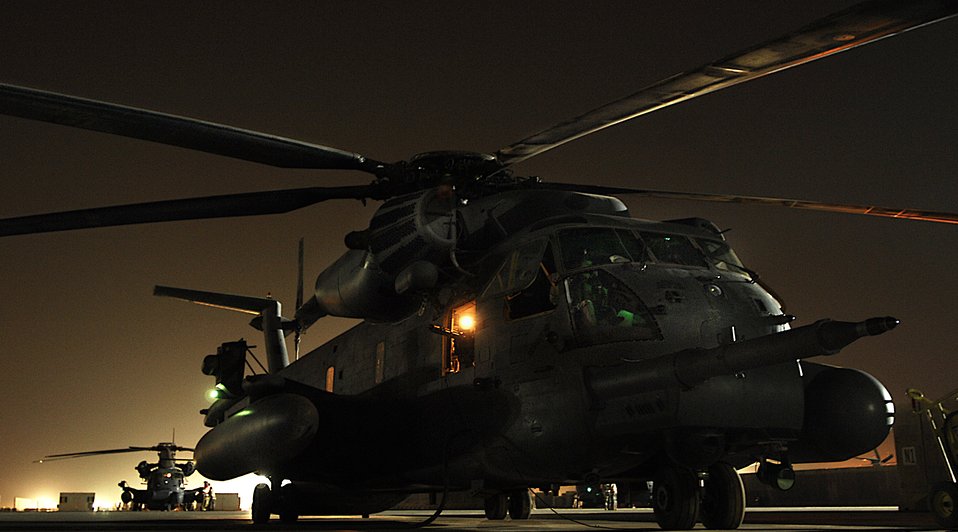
The final countdown

MH-53 Pave Low helicopters prepare to take off for their final combat mission Sept. 27 in Iraq. The MH-53 was retired from the Air Force inventory Sept. 30. It was the largest and most technologically advanced helicopter in the Air Force, with a service record dating back to the Vietnam War.